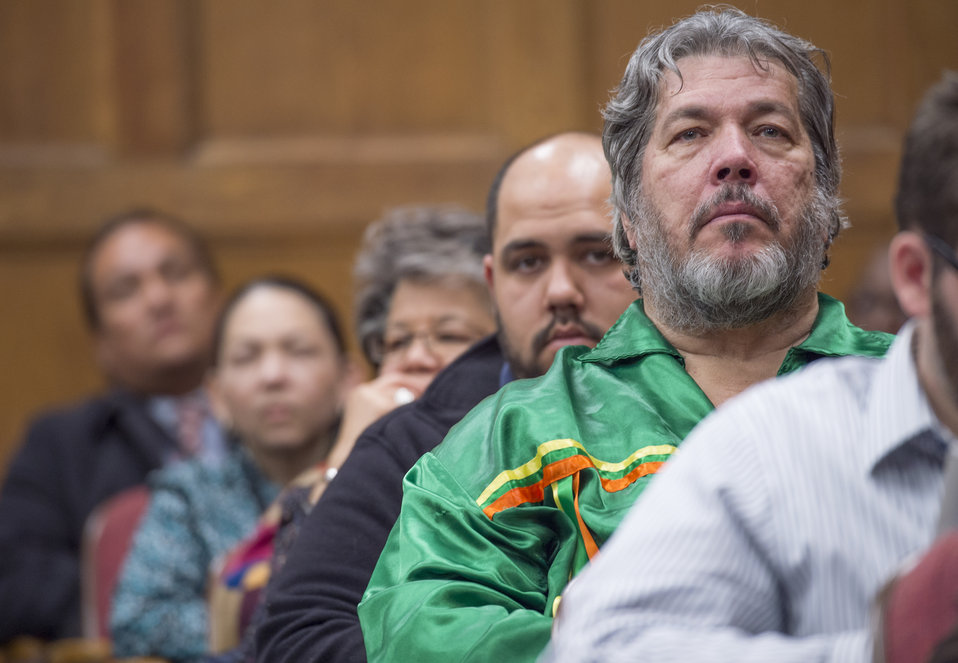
Members of the audience listen to speakers at the 2013 American Indian and Alaska Native Heritage Observance at the U.S. Department of Agriculture (USDA) on Thursday, Nov. 14, 2013 in Washington, D.C. The theme of this year’s event was 'Guiding Our Destiny with Heritage and Traditions.'